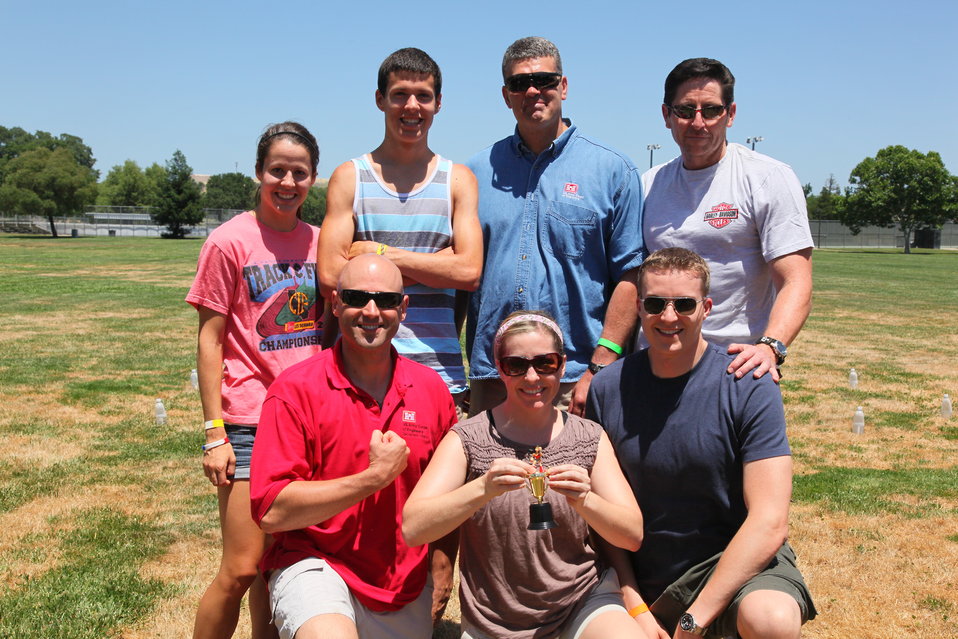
2011 Annual Picnic